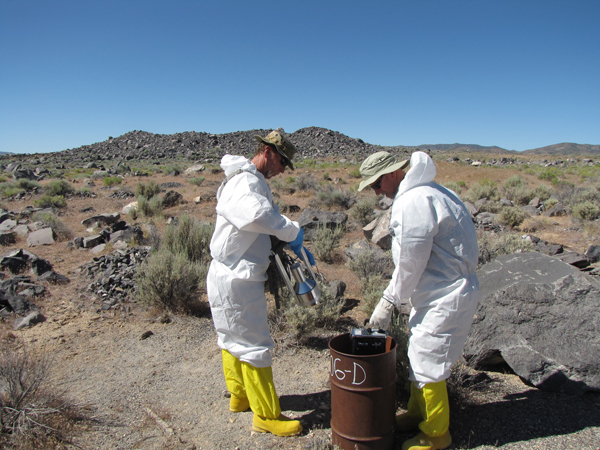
Nevada closure work

Workers completed closure activities at 21 historic nuclear test locations at the NNSS, including Sedan, Schooner, Danny Boy and Buggy. Remediation of these sites, which involves implementing use restrictions and long-term institutional controls, represents a significant achievement for the DOE complex. In this photo, workers take radiological measurements at the Danny Boy site.